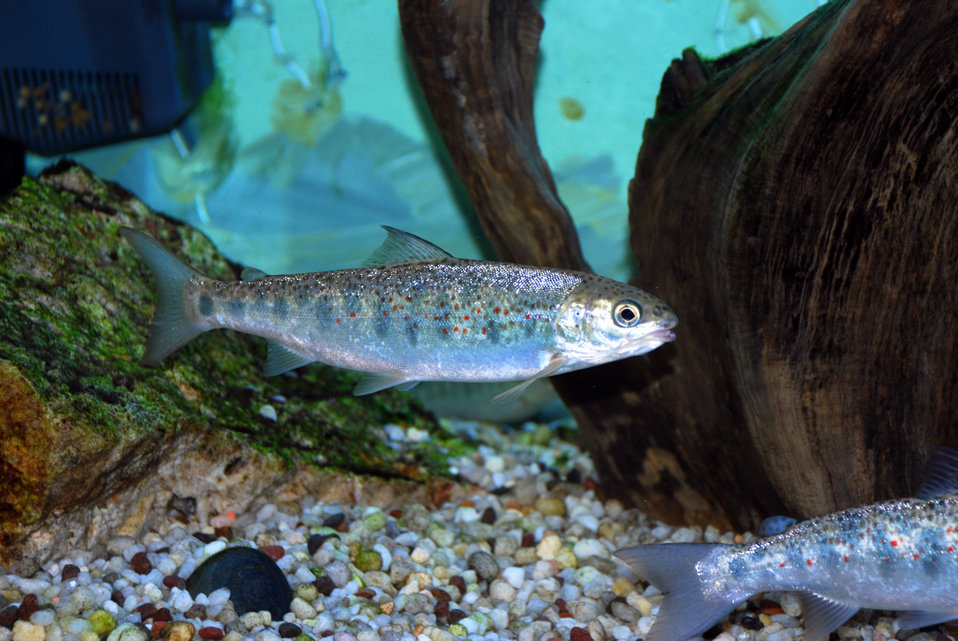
Atlantic Salmon Pre-Smolt

This individual shows fading vertical parr marks, a characteristic of the parr stage, gradually taking on the silvery sheen of the smolt stage in advance of migrating to the North Atlantic Ocean to feed.